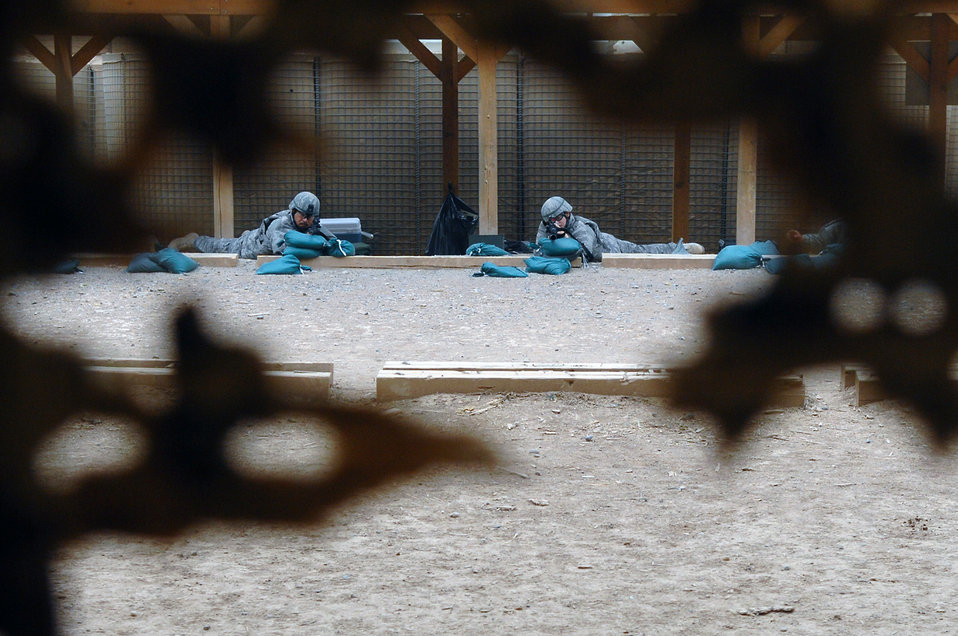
Zeroing in

Airmen from the 332nd Expeditionary Security Forces Squadron adjust their defensive fighting positions before shooting live rounds at silhouette targets April 30 at Balad Air Base, Iraq. The target simulates different distances by using various sized silhouetted figures.